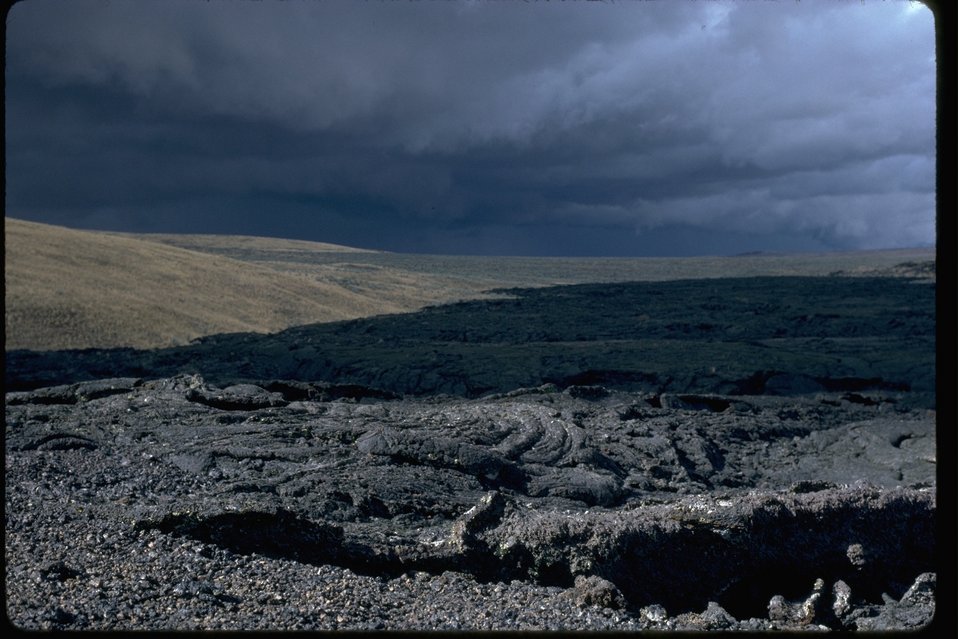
Jordan Craters Wilderness Study Area near Coffee Pot Crater. OR 3-128.